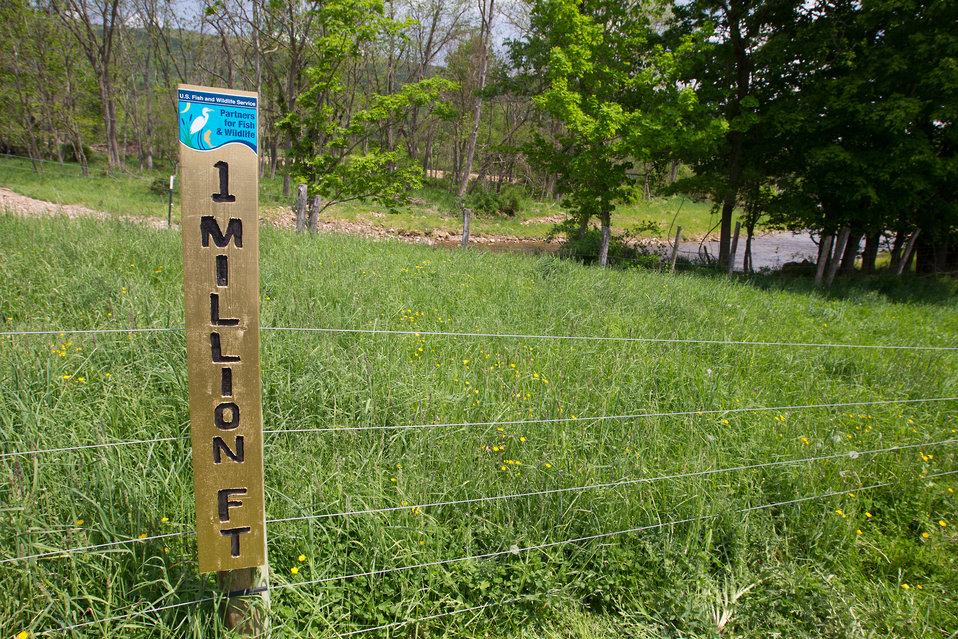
Celebrating 1 Million Feet of Conservation Fence in WV

Partners for Fish and Wildlife Program